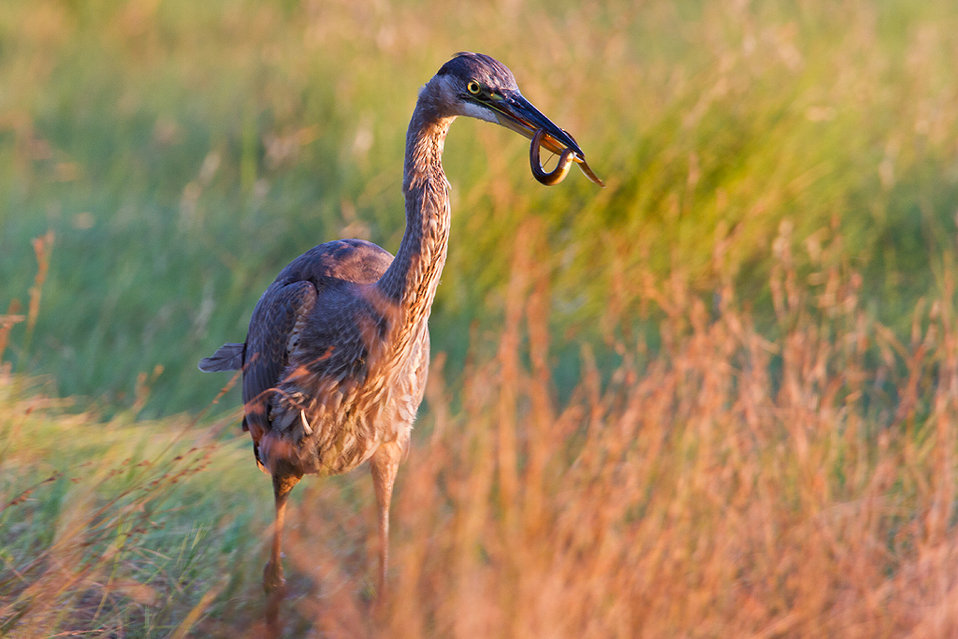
Heron Eating

Photographed at Rachel Carson National Wildlife Refuge.

Credit: Steve Norris/USFWS Volunteer

www.fws.gov/refuge/rachel carson/